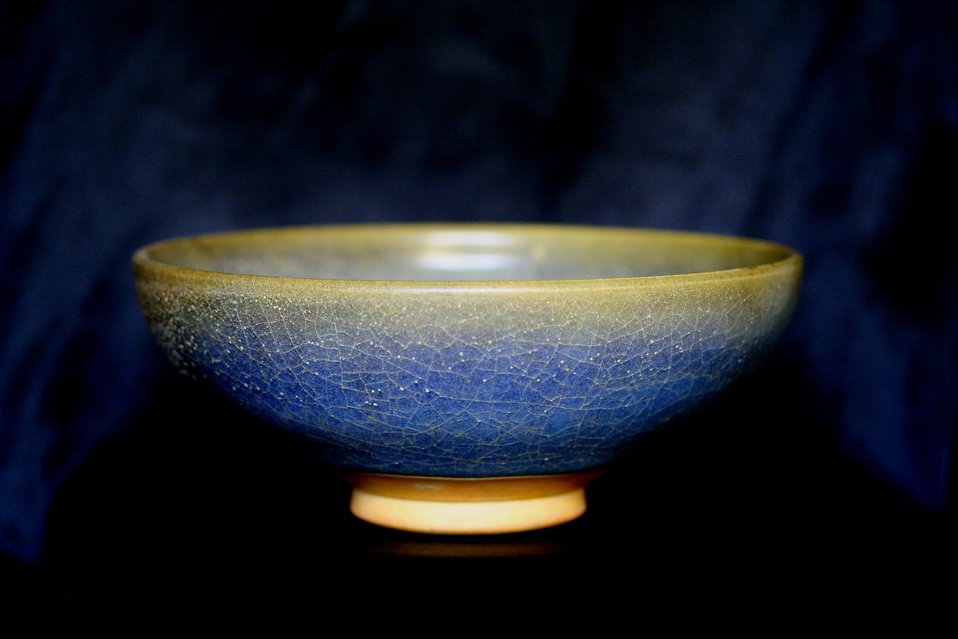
Yuan period Jun bowl